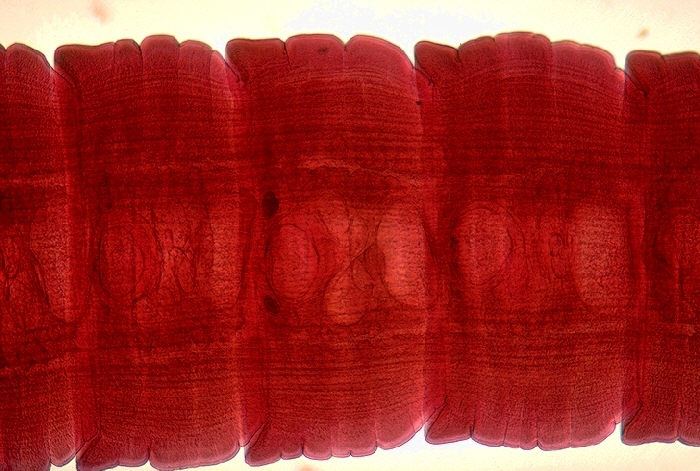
Posterior chain of Mesocestoides sp.